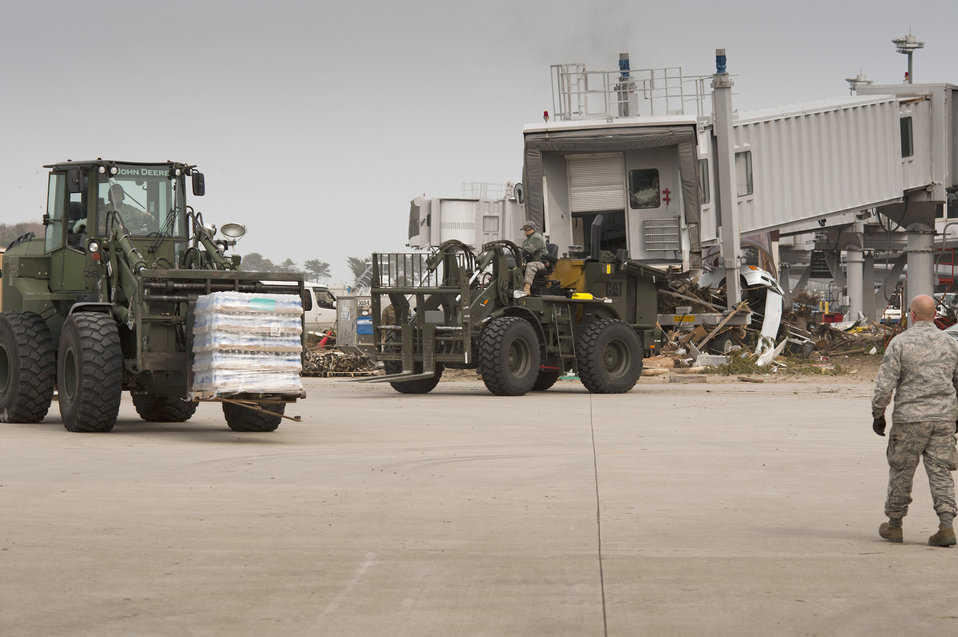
AFSOC aids Operation Tomodachi

Members of the 353rd Special Operations Group drive forklifts carrying pallets of freshwater to be loaded onto Japan Ground Self-Defense Force trucks March 20, 2011, at Sendai Airport, Japan. Airmen from the 320th Special Tactics Squadron manage the airfield with the help of the 353rd SOG, Marines, JGSDF and other Japanese agencies. Sendai Airport has become a main hub for bringing humanitarian aid to those affected by the March 11 earthquake and tsunami.